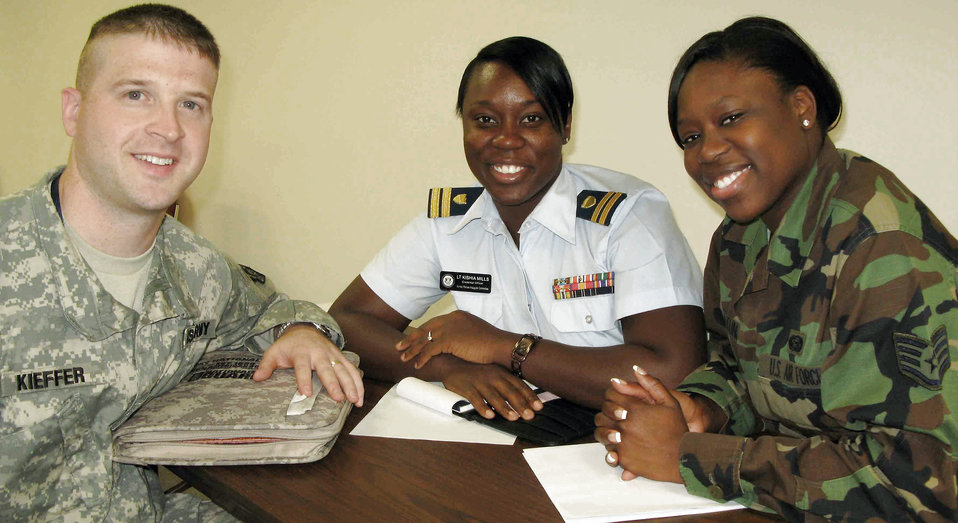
Inaugural committee prepares to welcome new president

Armed Forces Inaugural Committee members Army Capt. Sam Kieffer, Coast Guard Lt. Kishia Mills and Staff Sgt. Olayinka Olatunji prepare to issue building and other credentials to the new AFIC members Nov. 5 in Washington, D.C.